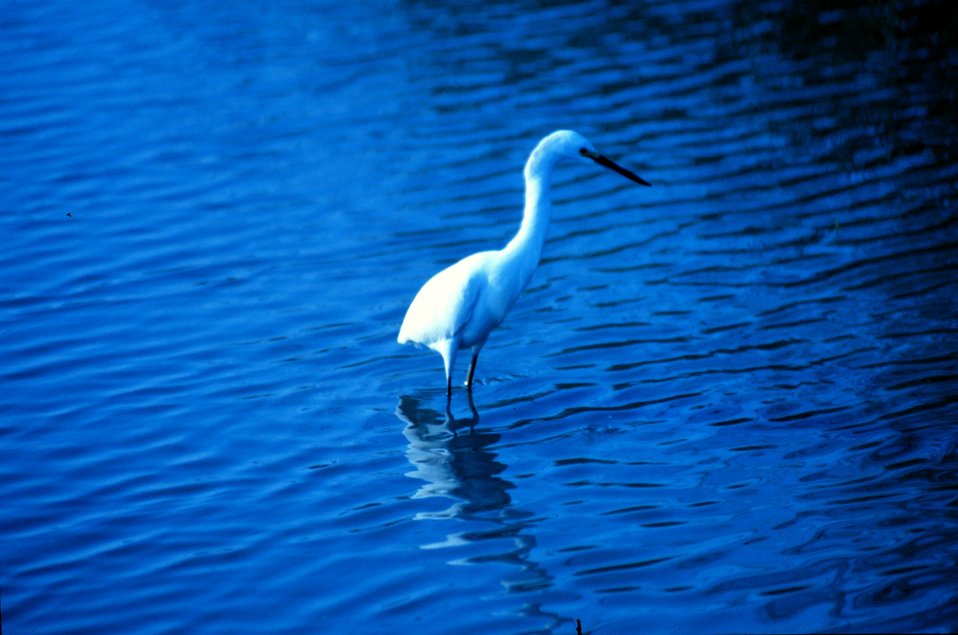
A great white egret in the tidal waters of Charleston harbor.